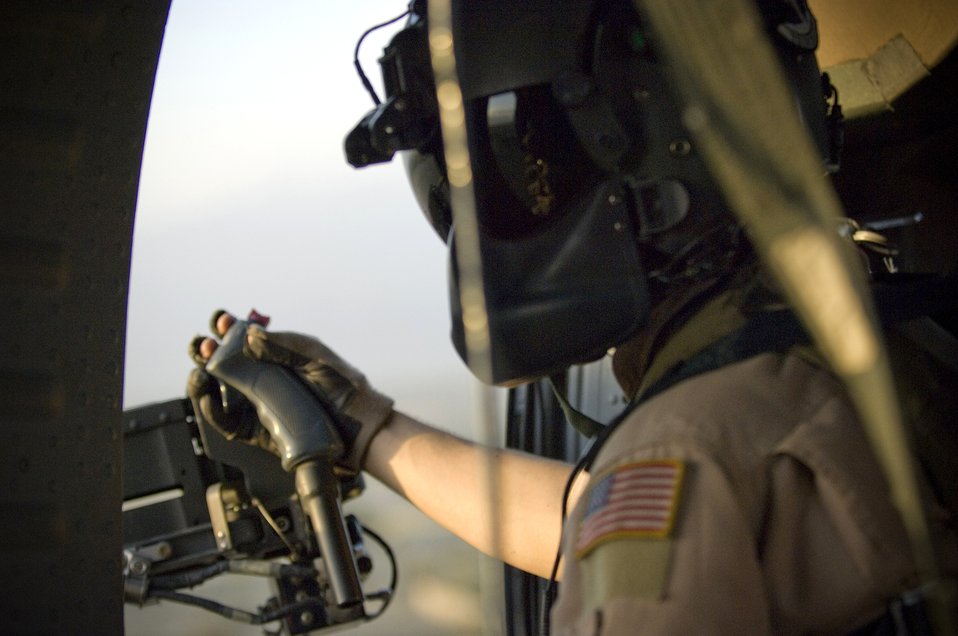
HH-60Gs integrate with Army AH-64s for war missions

Senior Airman Chris Bridges scans the horizon for any threats during a combat search and rescue mission on board an HH-60G Pave Hawk Sept. 25 near Bagram Airfield, Afghanistan. Airmen of the 33rd Expeditionary Rescue Squadron conducted training for integrated operations with the Army's AH-64 Apache for combat search and rescue missions in high threat environments. Airman Bridges is a HH-60G gunner for the 33rd Expeditionary Rescue Squadron.